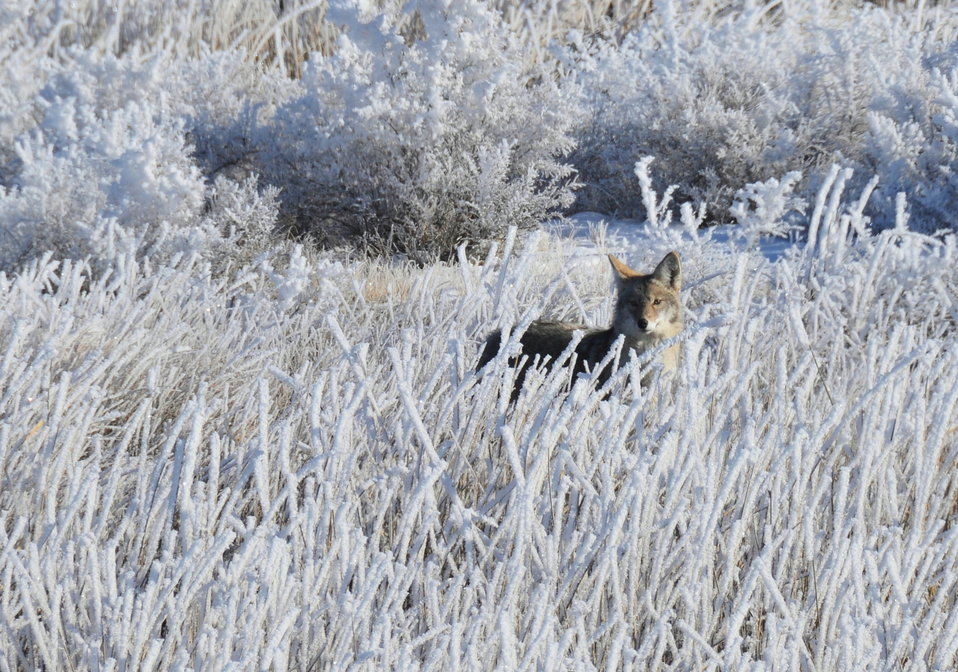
Coyote in hoar frost on Seedskadee NWR 1

Hoar frost forms during the winter when there is evening fog and no wind. In the morning, as soon as the wind blows or the sun begins to shine, the hoar frost is quickly gone. This coyote was looking for a morning breakfast of meadow vole on Seedskadee National Wildlife Refuge.